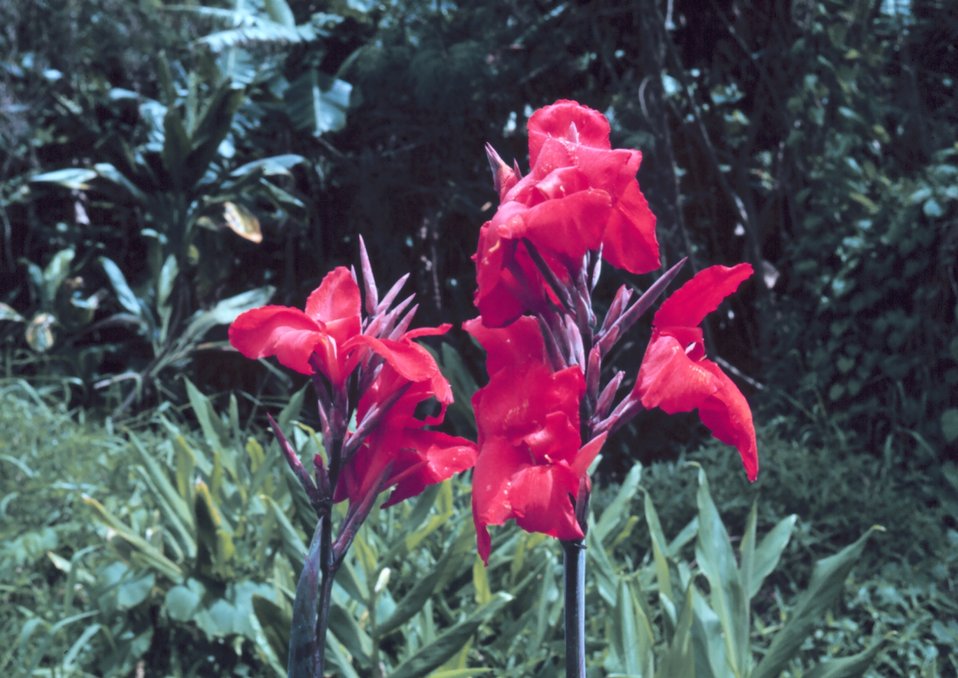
Hawaiian flowers